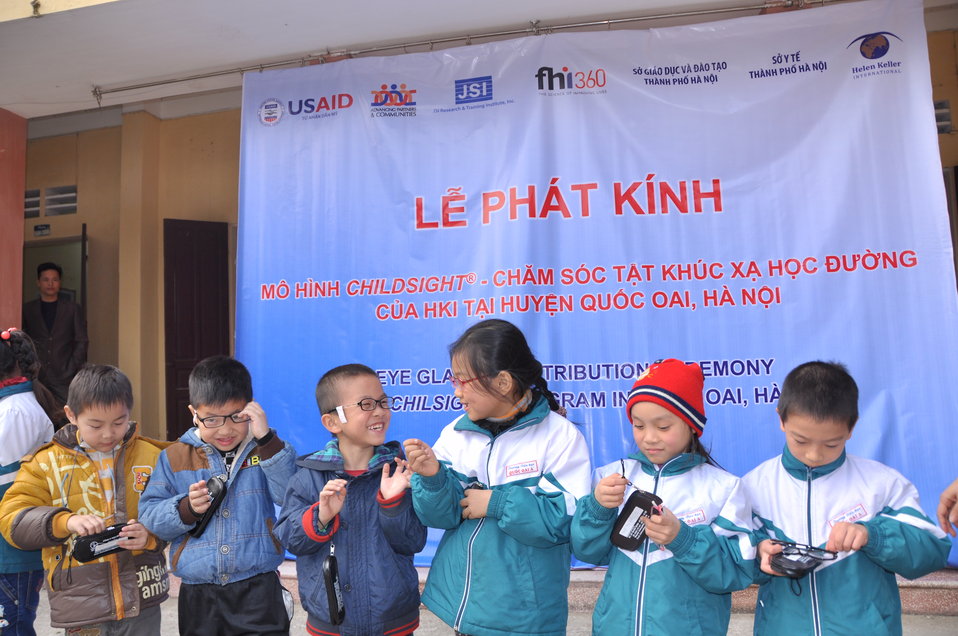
USAID supports distribution of eyeglasses to pupils and teachers in Quoc Oai, Hanoi.

Kieu Phu Junior Secondary School, Quoc Hoai, Hanoi, December 23, 2013.